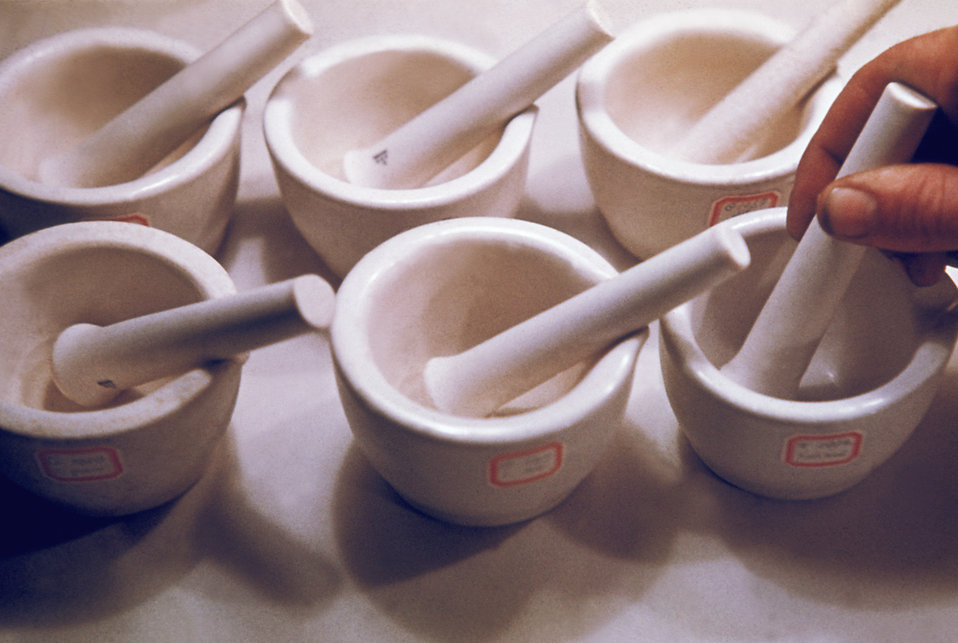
Mortars and pestles used in plague studies, 1965.